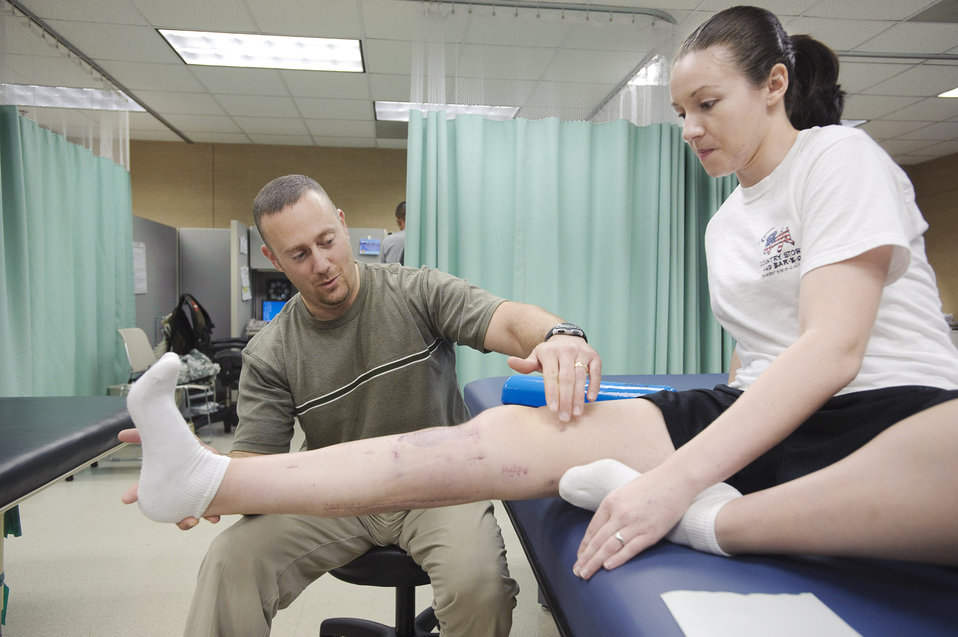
Captain, family reflect on blessings

John Inzinna physical therapy assistant Brook Army Medical Center, San Antonio, TX, helps Capt. Wendy Koseka 19th Airlift Wing legal officer Little Rock Air Force Base, build up her quadriceps muscle using gravity, during a physical therapy session at Brook Army Medical Center?s outpatient physical therapy clinic.